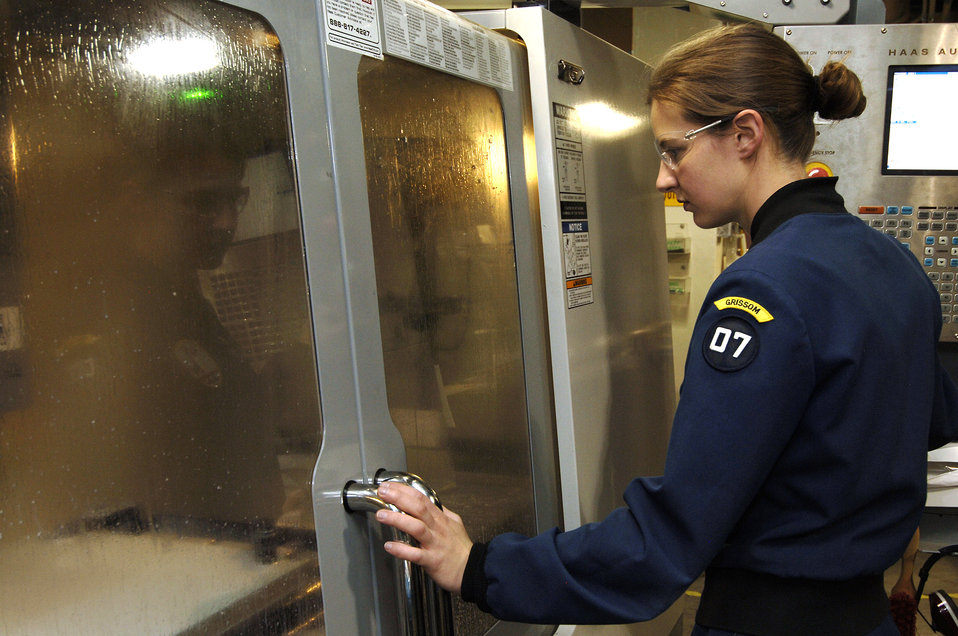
Satellite-savvy cadets accomplish out of world experiments

Cadet senior Katherine Gulczynski mills out a side panel April 12 for Falcon Satellite-5 using a Computer Numerical Control. computer